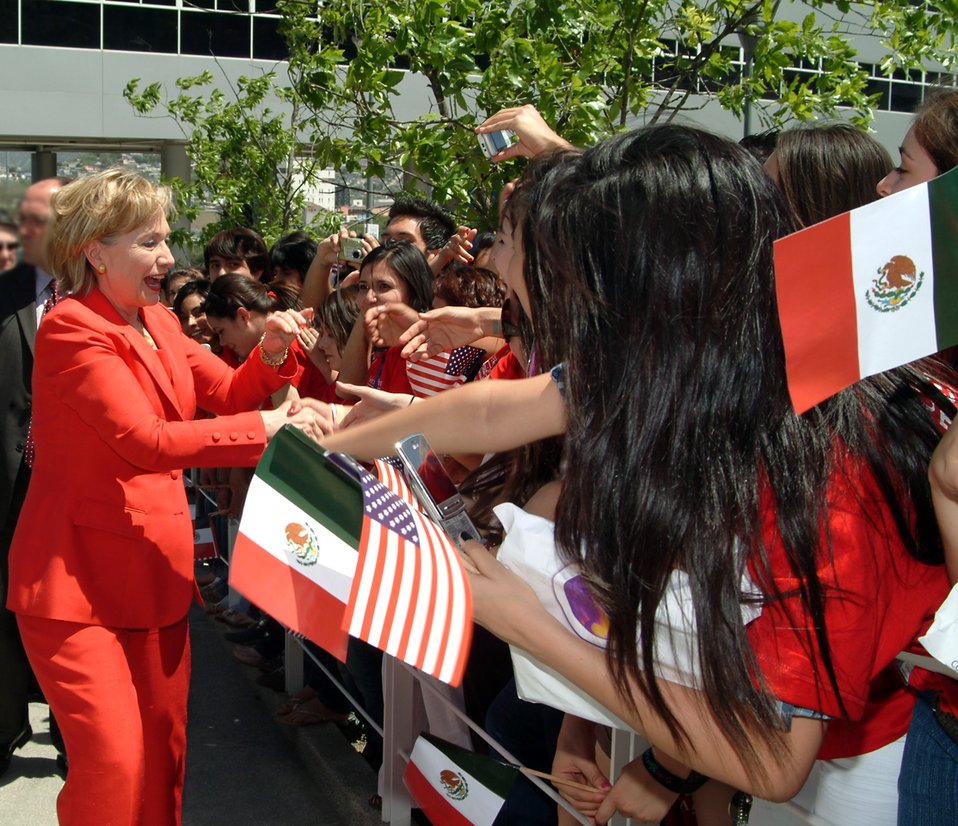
Secretary Clinton at TecMilenio University

U.S. Secretary of State Hillary Rodham Clinton greets students upon arrival at Tecmilenio University in Monterrey, Mexico March 26, 2009.